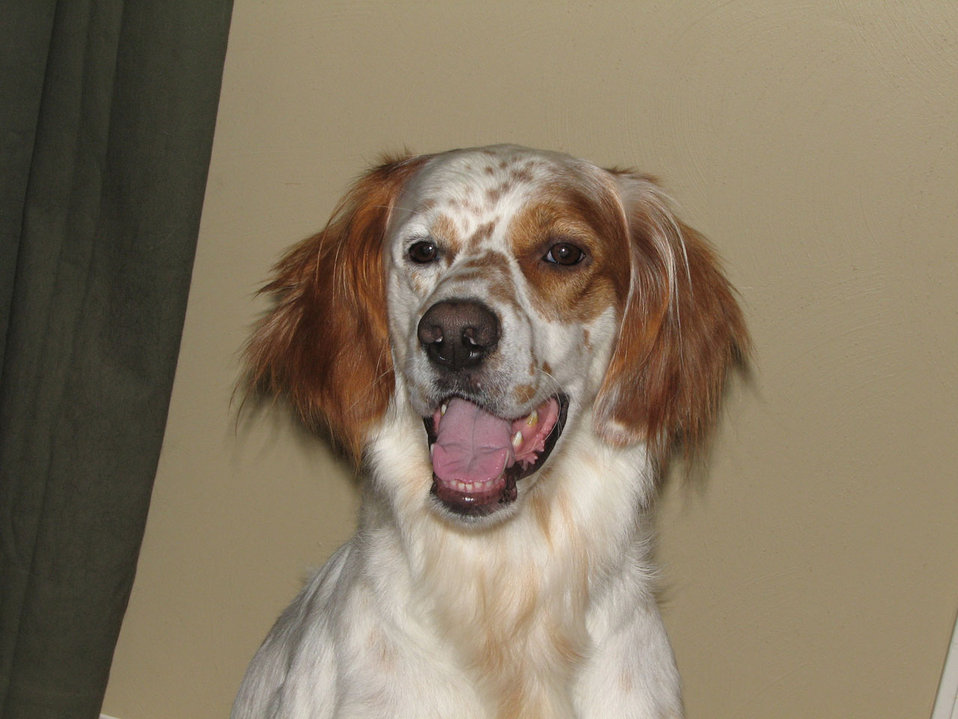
Sweet petey pie

The best dog ever.